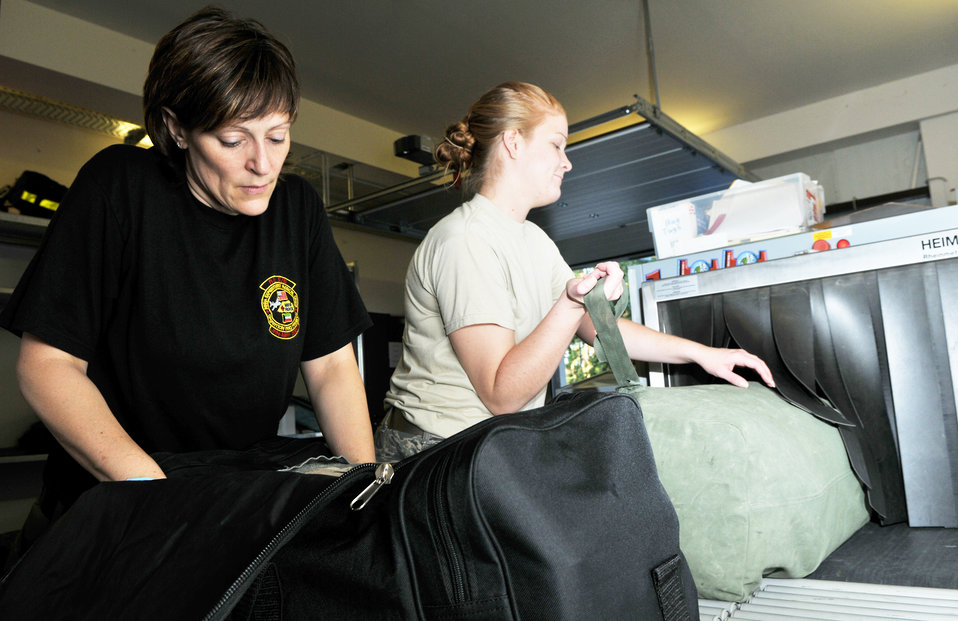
Aeromedical staging facility staff to reach major milestone in warrior care

Tech. Sgt. Christina Werkin and Senior Airman Lisa Kennedy check wounded warriors' baggage Aug. 27, 2009, Ramstein Air Base, Germany. Sergeant Werkin and Airman Kennedy are 86th Contingency Aeromedical Staging Facility medical technicians.